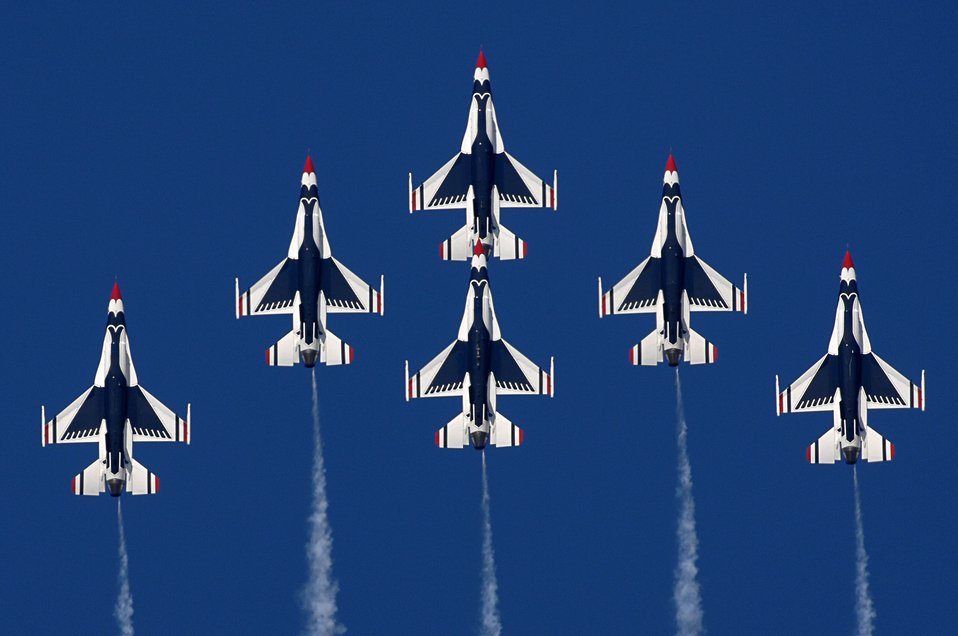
Thunderbirds announce 2009 officer selections

The Air Force Thunderbirds headlined the 2008 McGuire Air Expo May 31 and June 1 at McGuire Air Force Base, N.J. The Airmen of the air demonstration squadron perform precision aerial maneuvers demonstrating the capabilities of Air Force high performance aircraft to people throughout the world.